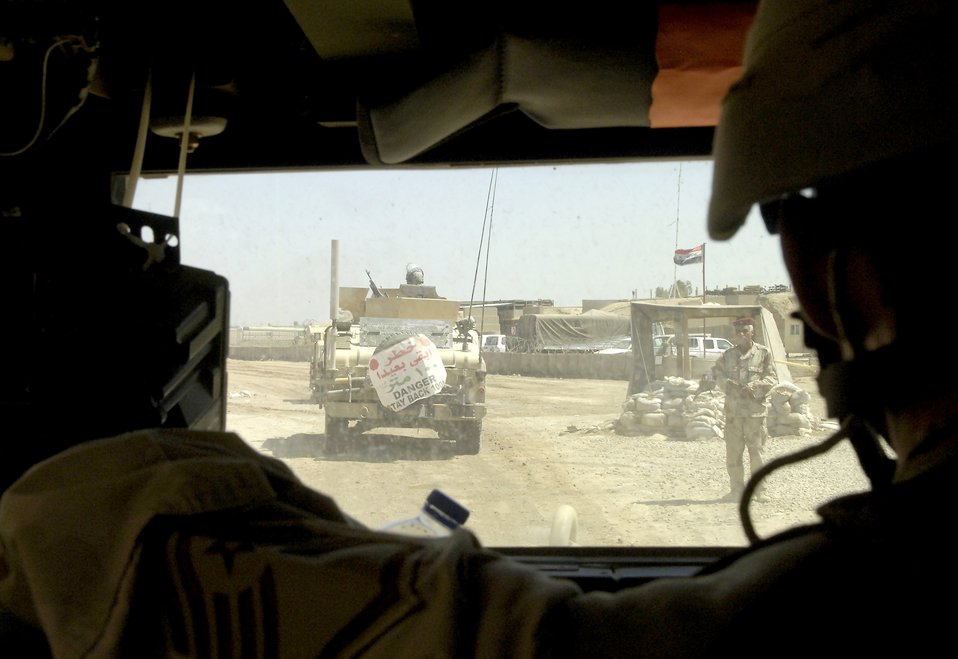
Airmen train Iraqi soldiers

Master Sgt. Tony Pesson observes the 1st Iraqi Army Division/Iraqi Intervention Forces as his convoy enters an Iraqi base on Thursday, May 25, 2006. Sergeant Pesson is the NCO in charge of Base Defense Unit Team 3602, which advises and trains Iraqi soldiers on base defense procedures.